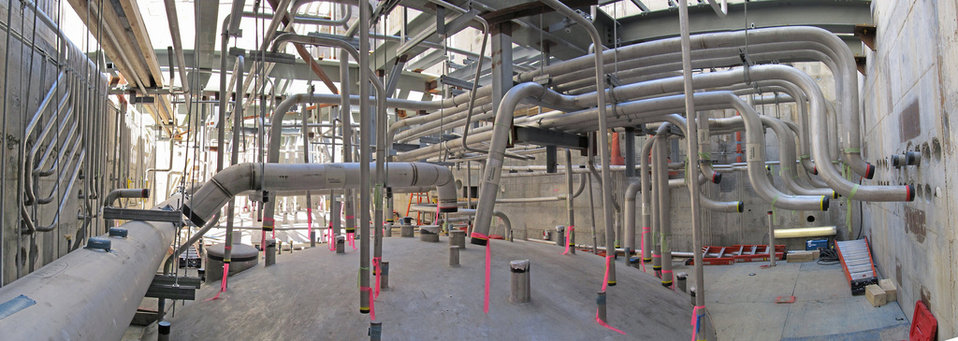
Preatreatment Piping Module

The module is 15 feet at its highest point and spans approximately 54 feet in length and 33 feet in width. It contains 3,900 linear feet of nuclear-quality stainless steel piping, ranging in size from 0.5 to 26 inches in diameter, and more than 70 pipe hangers.